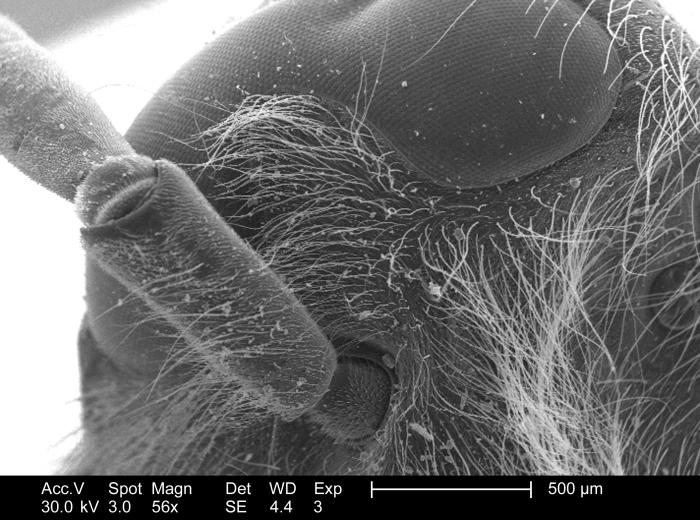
Though magnified only 56x, this 2005 scanning electron micrograph (SEM) depicted the anatomical relationship of the antenna, and the head of this unidentified hymenopteran specimen found deceased on the ground of the Decatur, Georgia suburbs. Behind the antenna, the compound eye is visible with its repeating pattern of ommatidia, which are the small visual units that when working in synchrony, gives the wasp a visual picture of its environment.